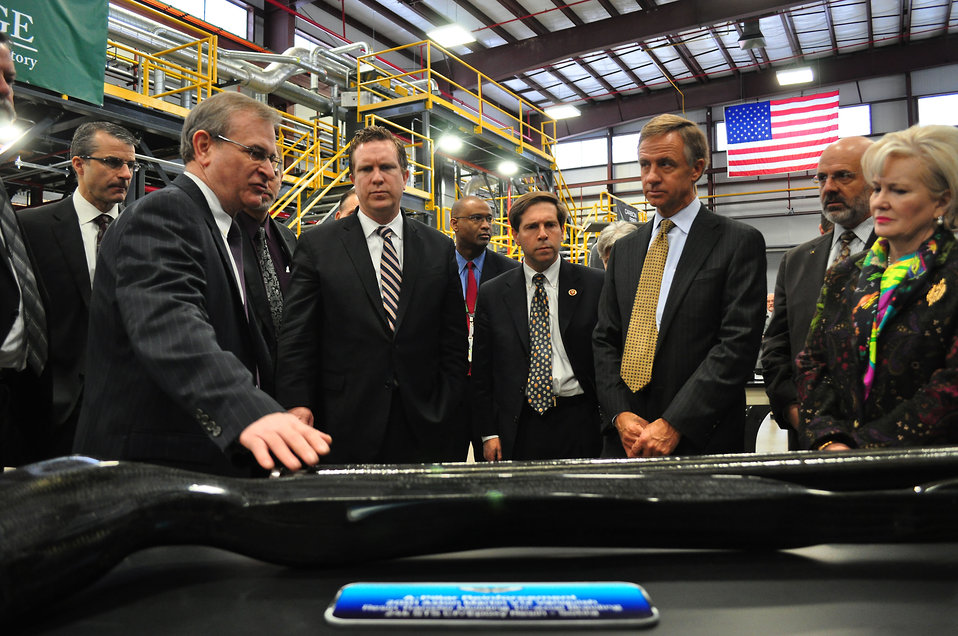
Carbon Fiber Technology Facilty Open House Oak Ridge Tennessee

13-025 DOE photo Lynn Freeny